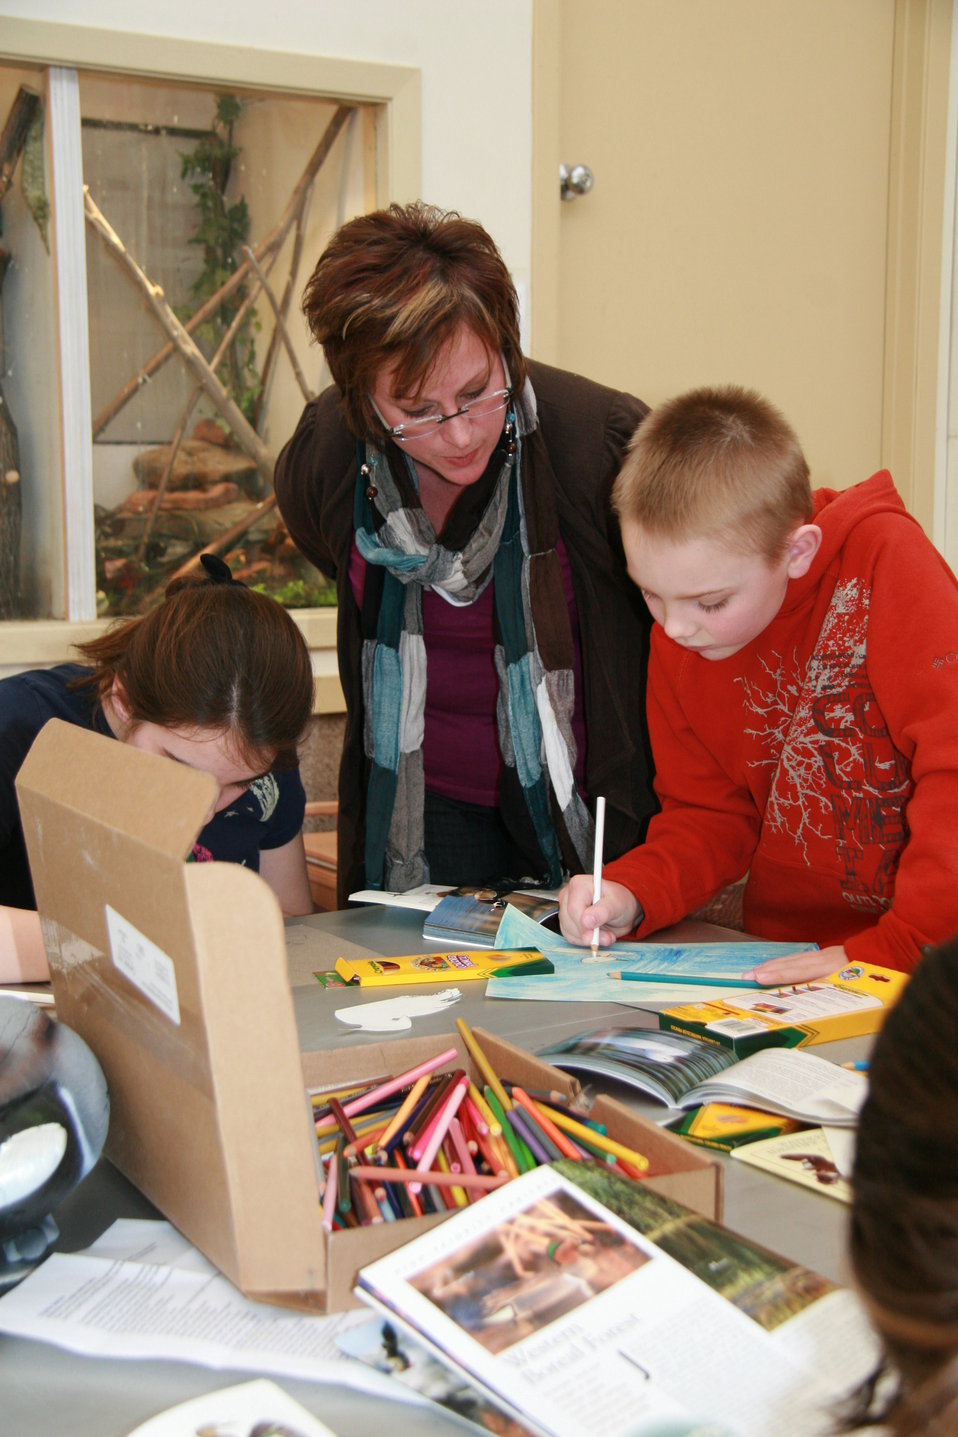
Jr. Duck Stamp Program in North Dakota

Jane Kalmbach of Kenmare, North Dakota has been partnering with U.S. Fish & Wildlife Service for the past two years helping to get the word out about the Jr. Duck Stamp Program. She has traveled to local towns near Des Lacs Refuge/Kenmare, ND to help teach about the importance of conservation through her passion for art.